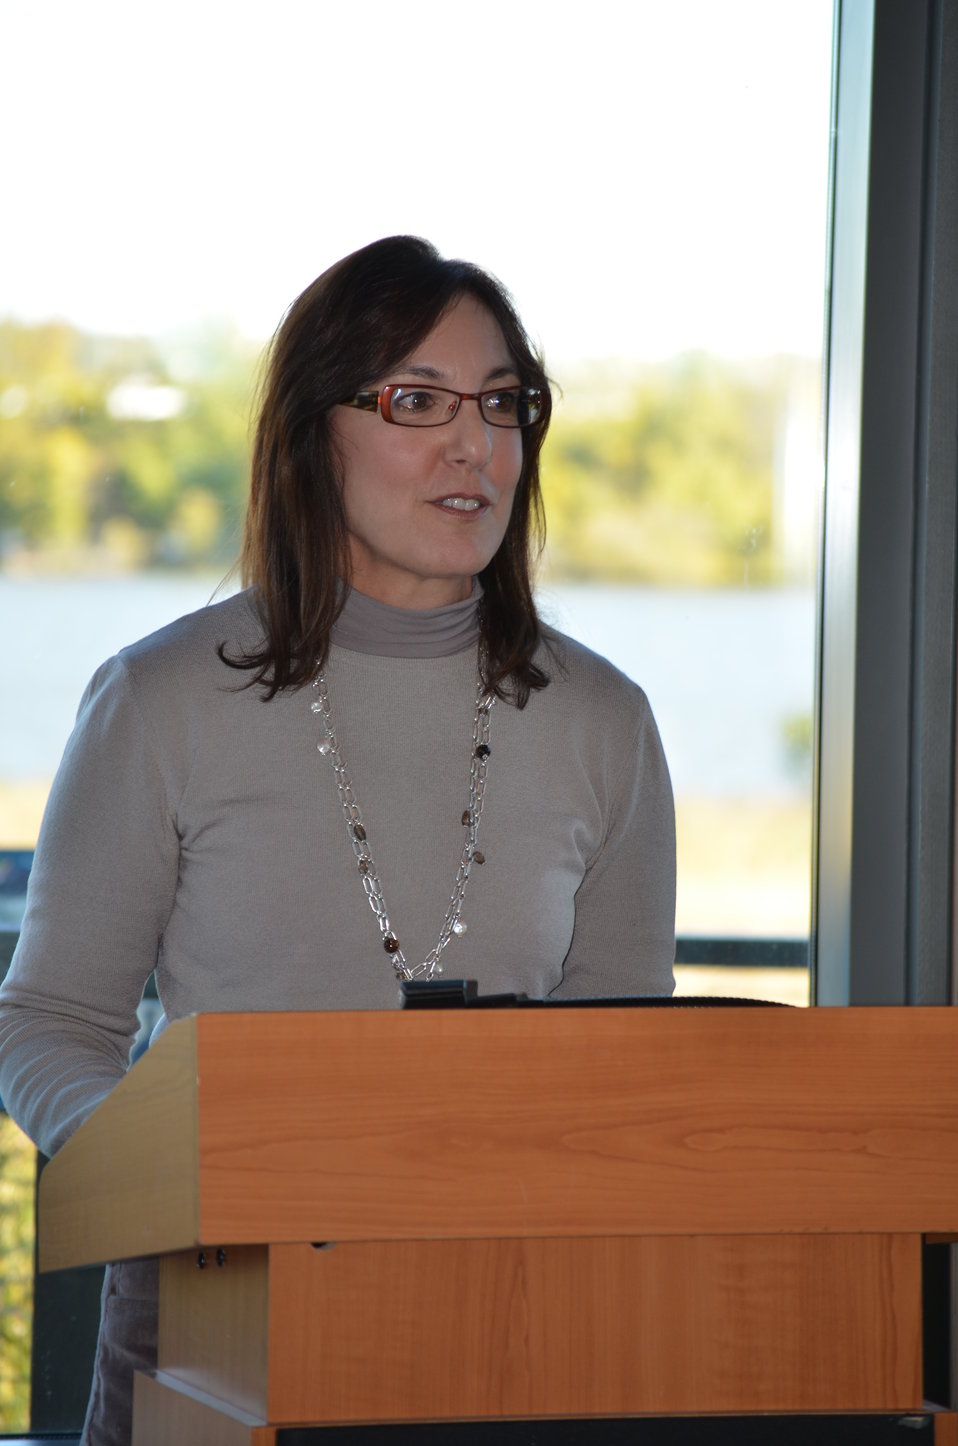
Acting Asst. Secretary Rachel Jacobson

Acting Asst. Secretary for Fish, Wildlife and Parks Rachel Jacobson congratulates partnership at Audubon Riverlands Center in West Alton, MO. USFWS/Ashley Spratt